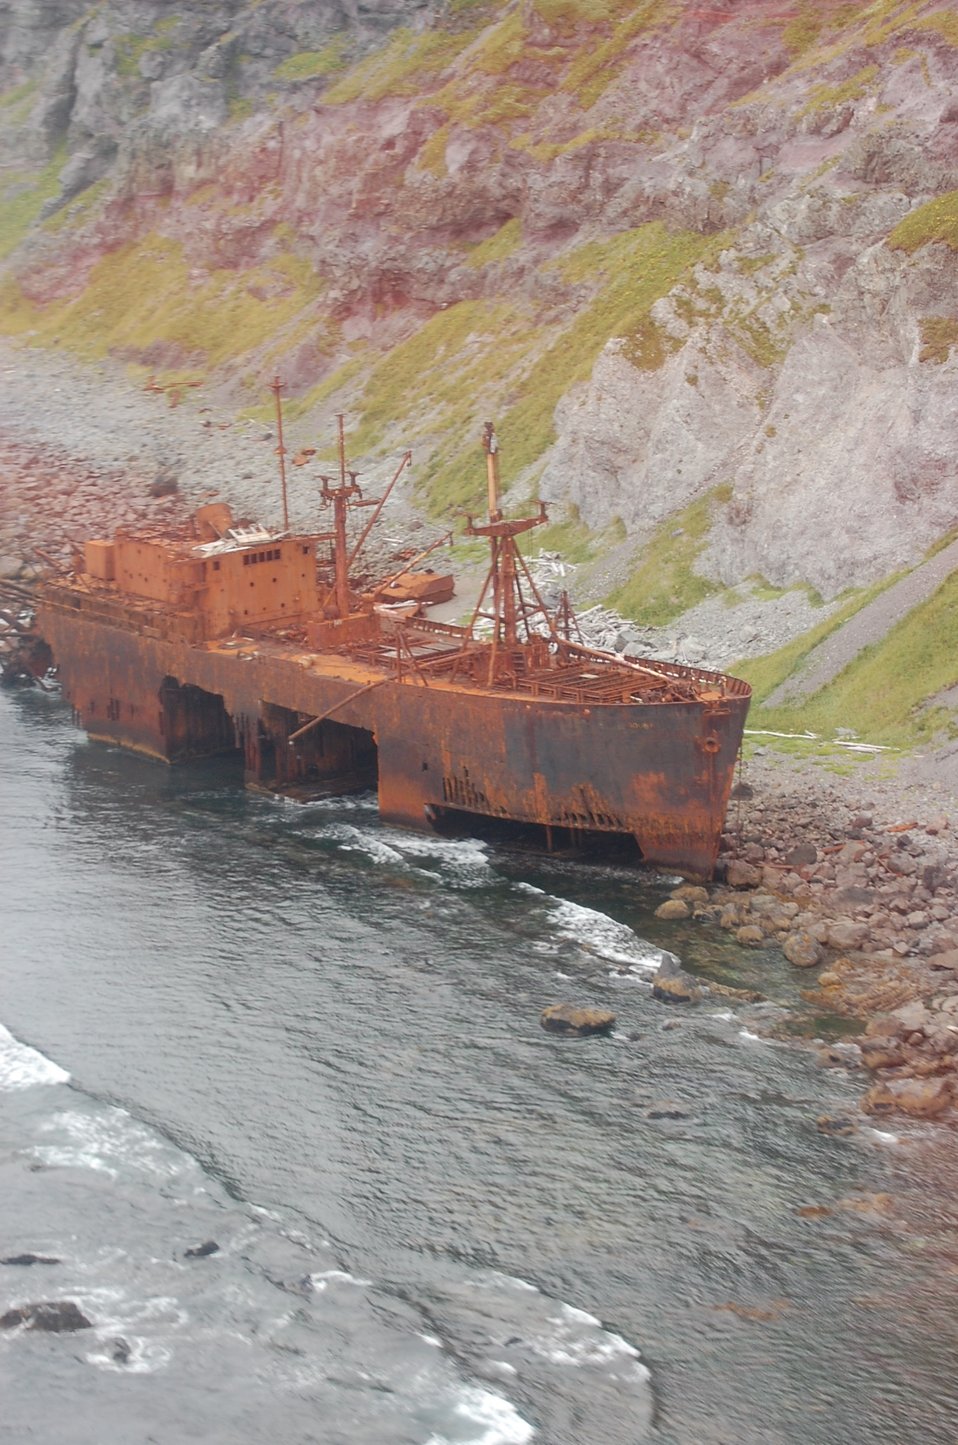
Shipwrecked Oduna

Ikatan Peninsula, Unimak Island, Alaska Maritime National Wildlife Refuge